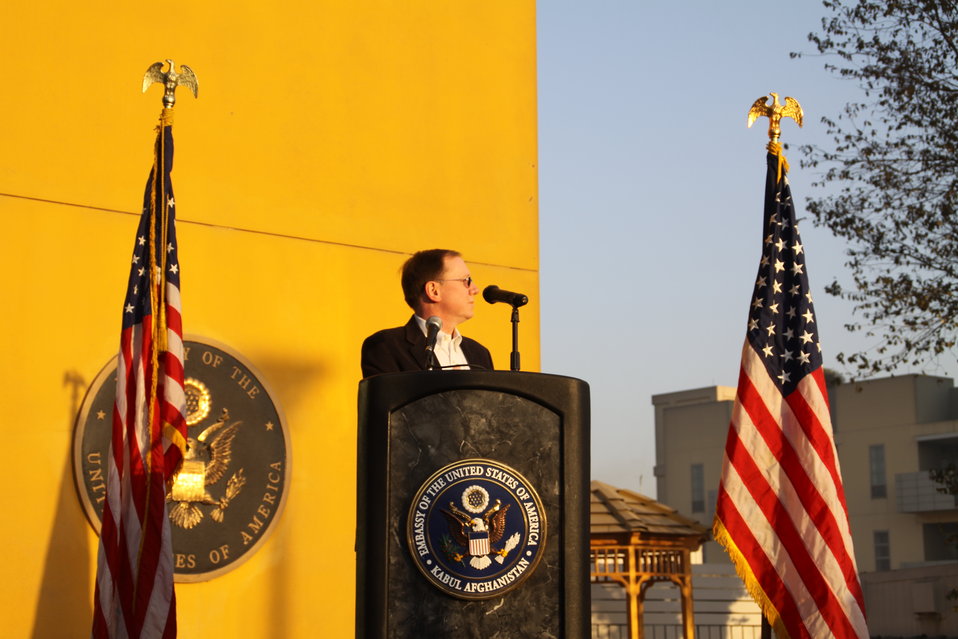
Ambassador Keith